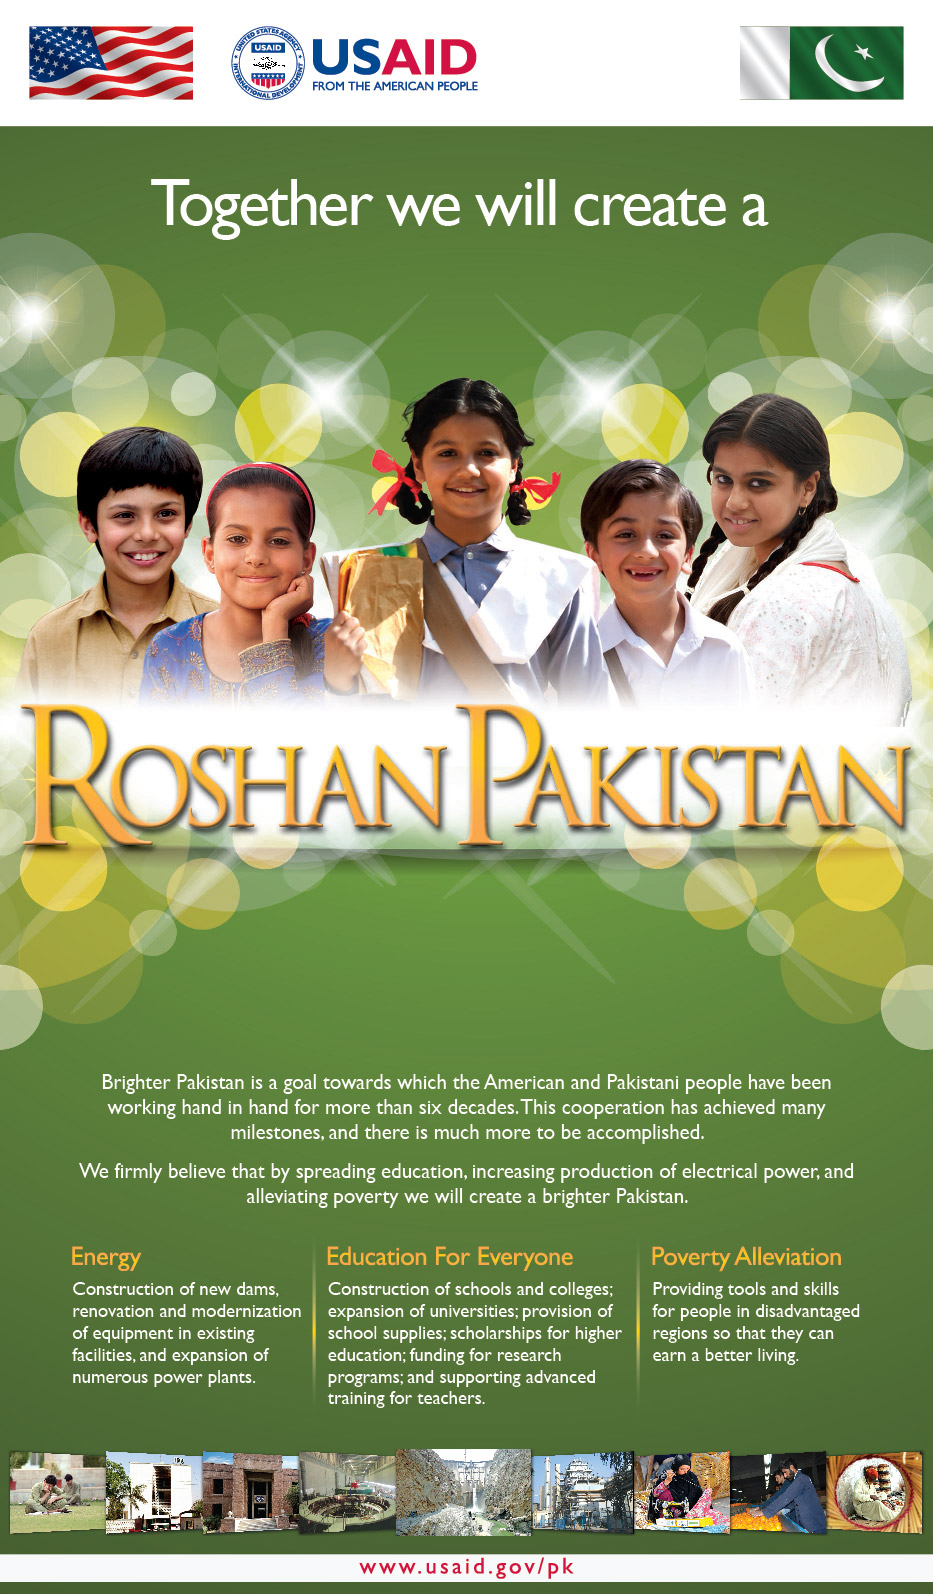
Together, we will create a Roshan Pakistan